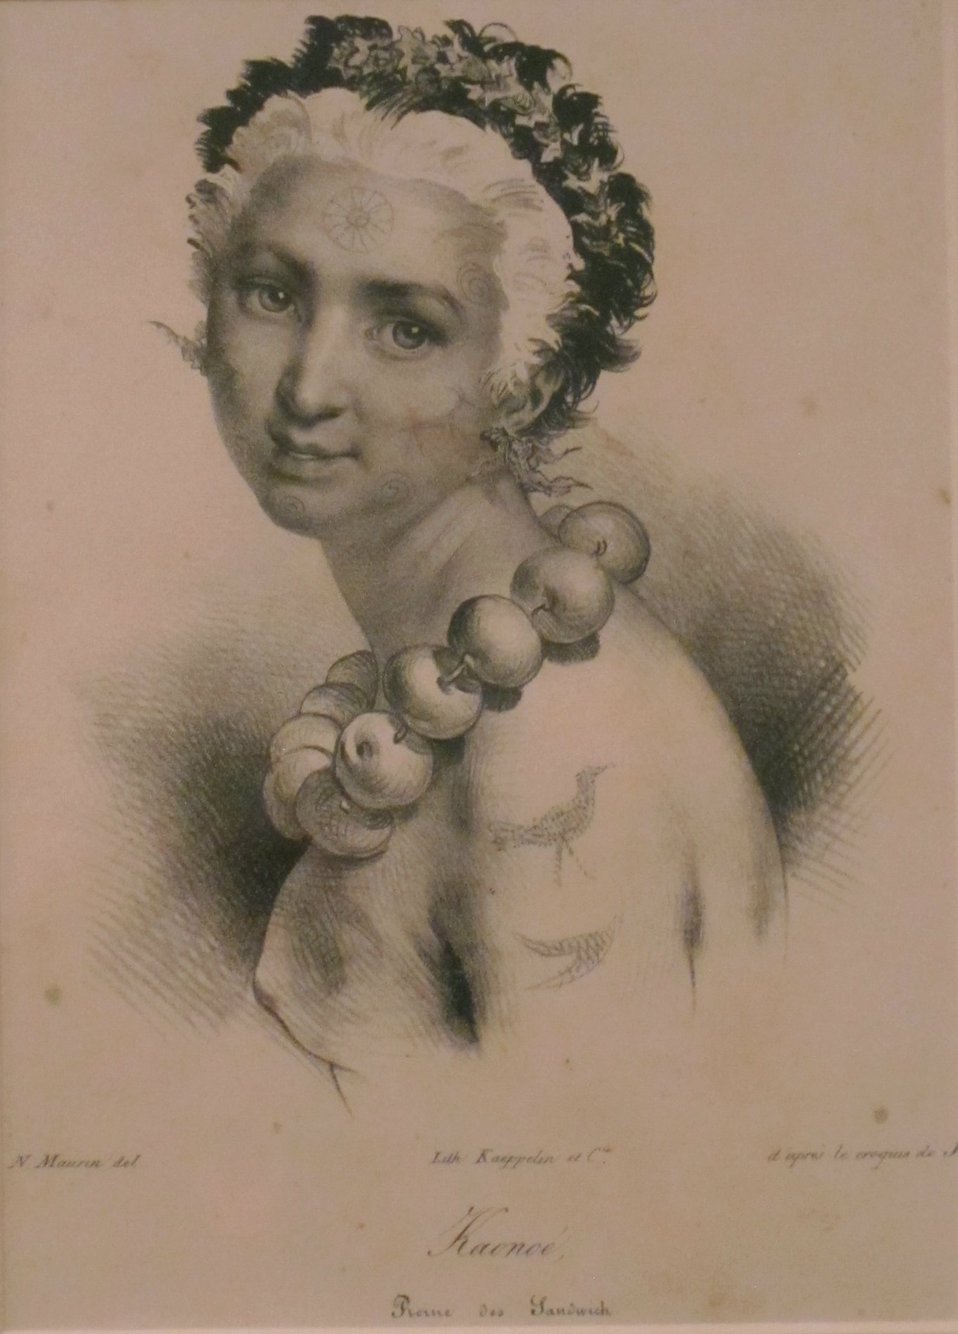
'Kaenoo, Hawaiian Queen', lithograph after Jacques Arago, Honolulu Museum of Art